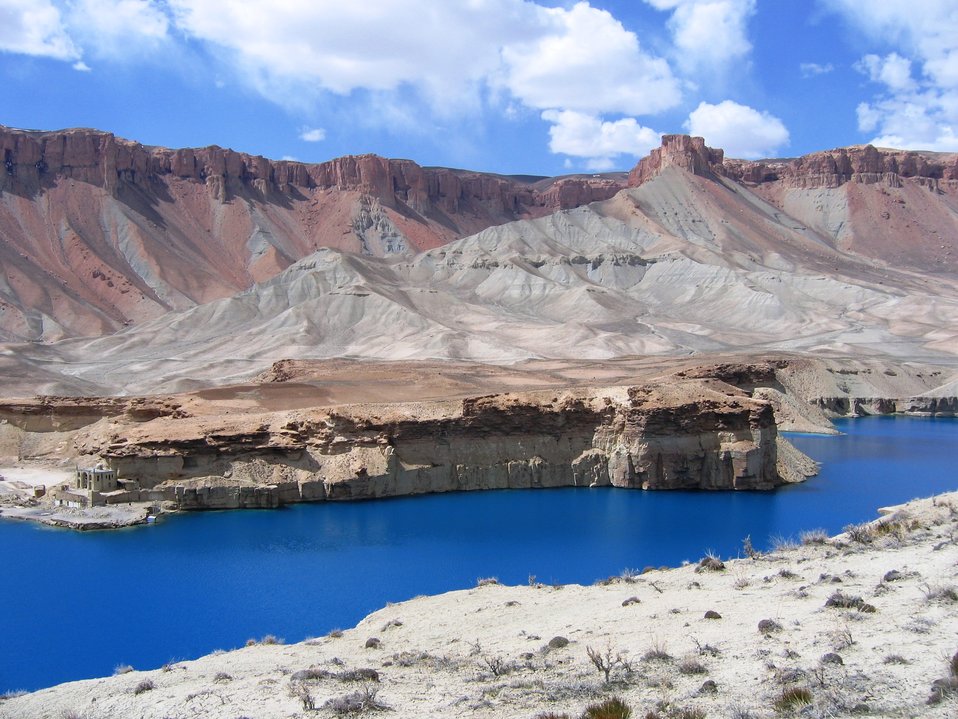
bamiyan 042908-oc 006

The beauty of the area’s six cobalt-blue Band-e-Amir lakes always stuns visitors to central Bamyan province. Natural travertine dams, created by calcium deposits over many years, support the lakes. They stretch across the valley in long graceful arcs, and merge into a strikingly beautiful landscape of stone, desert, and water. The vistas rival those of national parks anywhere in the world.
USAID, through its implementing partner the Wildlife Conservation Society (“WCS”), has been working since 2006 to develop the institutions and foster the consensus needed for the formation of a national park in the lakes area. The efforts ultimately resulted in the Earth Day declaration in 2009, of Band-e-Amir as Afghanistan’s first national park by the Director General of Afghanistan’s National Environmental Protection Agency (NEPA).
Afghanistan’s Environment Law requires local management of protected areas. To fulfill that mandate, WCS initially educated the residents in the 13 villages located within the territory of the park about the economic opportunities that national park status would provide. The Band-e-Amir Protected Area Committee (BAPAC) recruited villagers to be members. BAPAC and WCS jointly prepared a management plan for the park, and WCS assisted local officials in successfully navigating the national park proposal process.
With USAID support, WCS is now training rangers to protect the flora and fauna in the park, and is educating the provincial and national government officials who must manage park operations and ensure sustainability. WCS continues to help the government develop laws and policies on protected areas and species, and community-based natural resource management.
In anticipation of national park status, local entrepreneurs had already begun building small shops, restaurants, and hotels to serve tourists. USAID-funded partners provided guidance to help them place these structures away from the most ecologically sensitive areas. Now that the park has achieved official status and protection, the local people will have the opportunity to protect, preserve, and profit from this beautiful landscape.